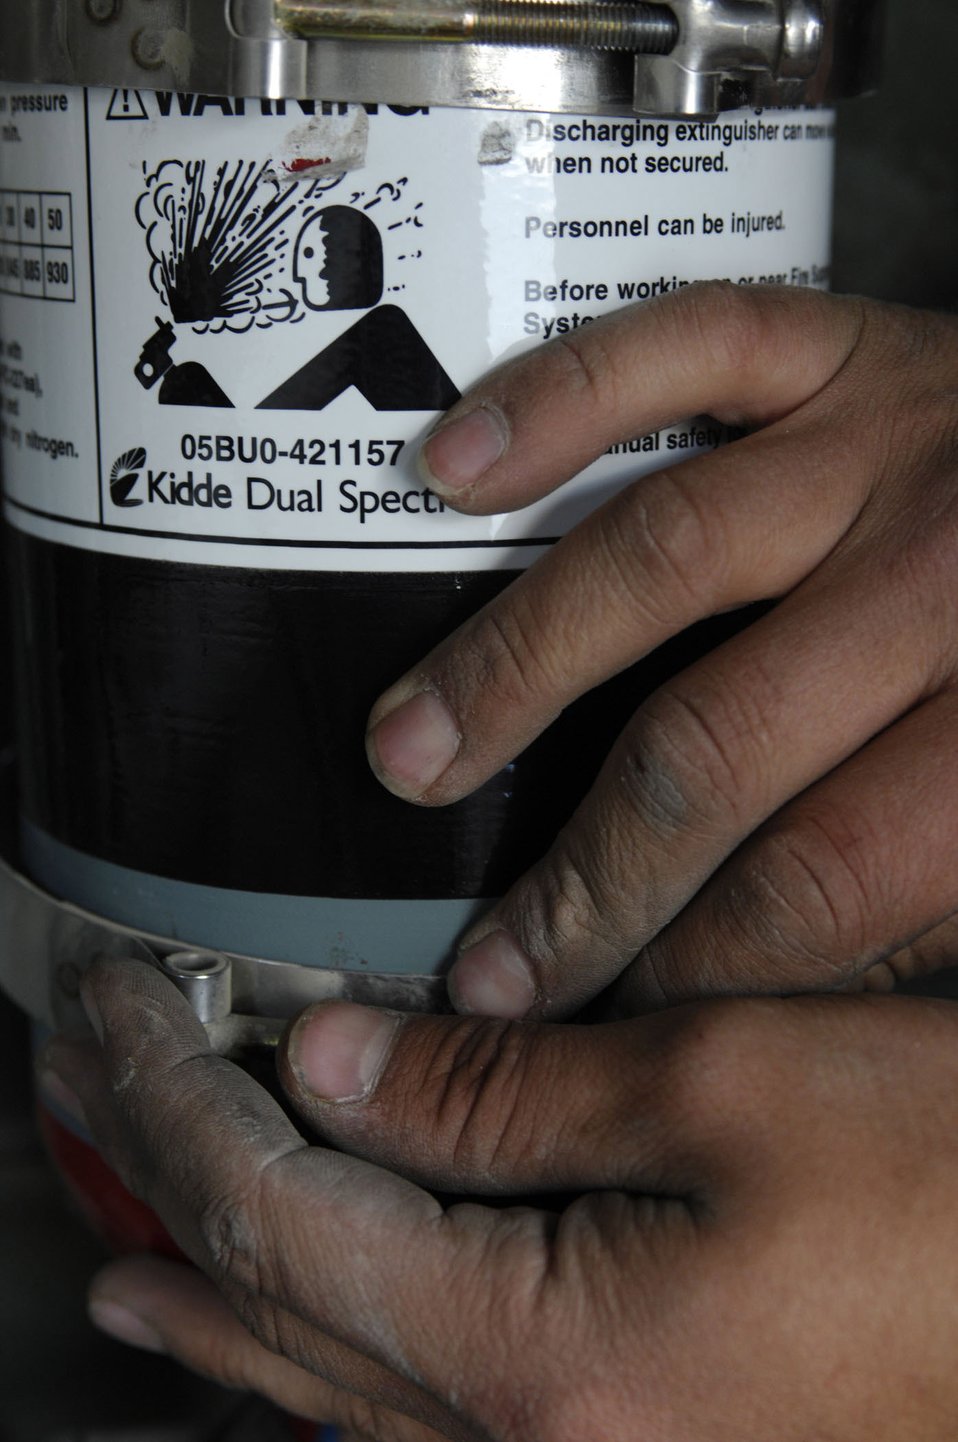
Frag Team Five

Senior Airman Josh Theunissen secures components of a fire suppression system to the inside of an Air Force Humvee Nov. 27. He is a member of Frag Team 5, which is responsible for installing up-armor kits, fire suppression systems, improved seat belts and gunner restraints in Air Force combat vehicles.